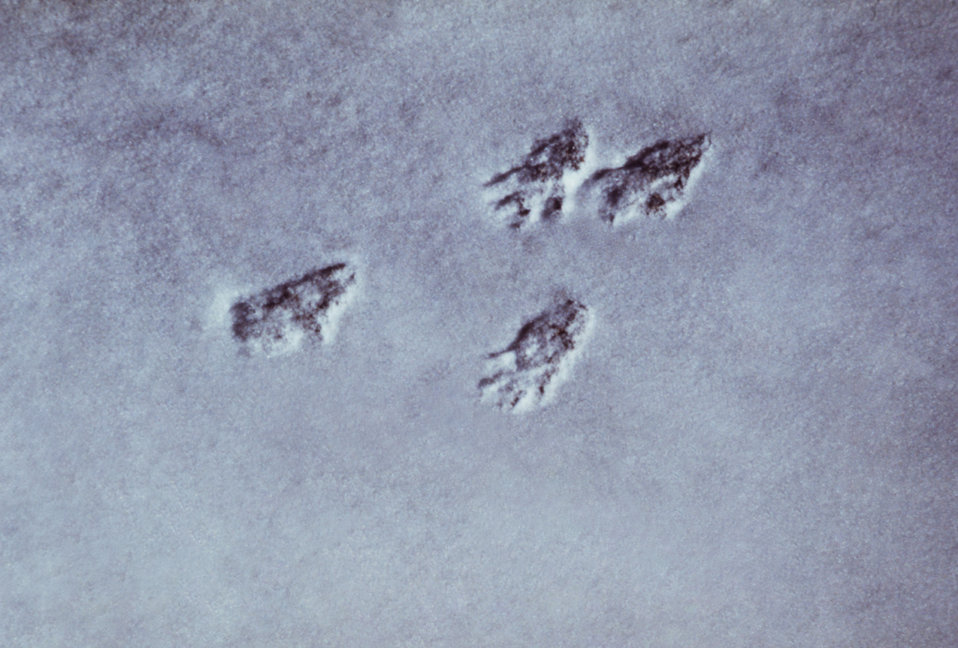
Found during a 1975 plague and tick fever study were these tree squirrel, Sciurus aberti tracks in Estes Park, Colorado.